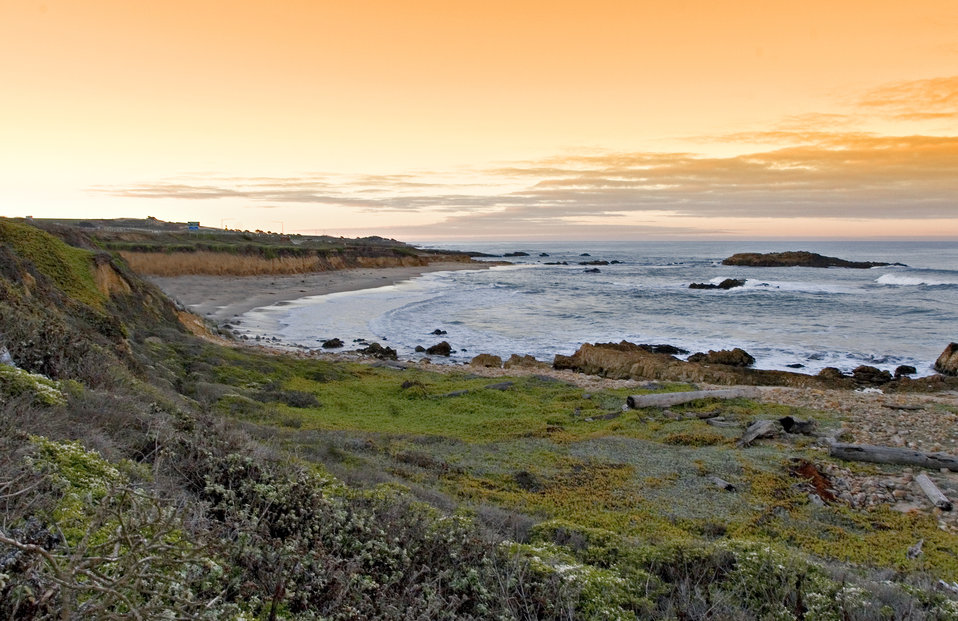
California Coast